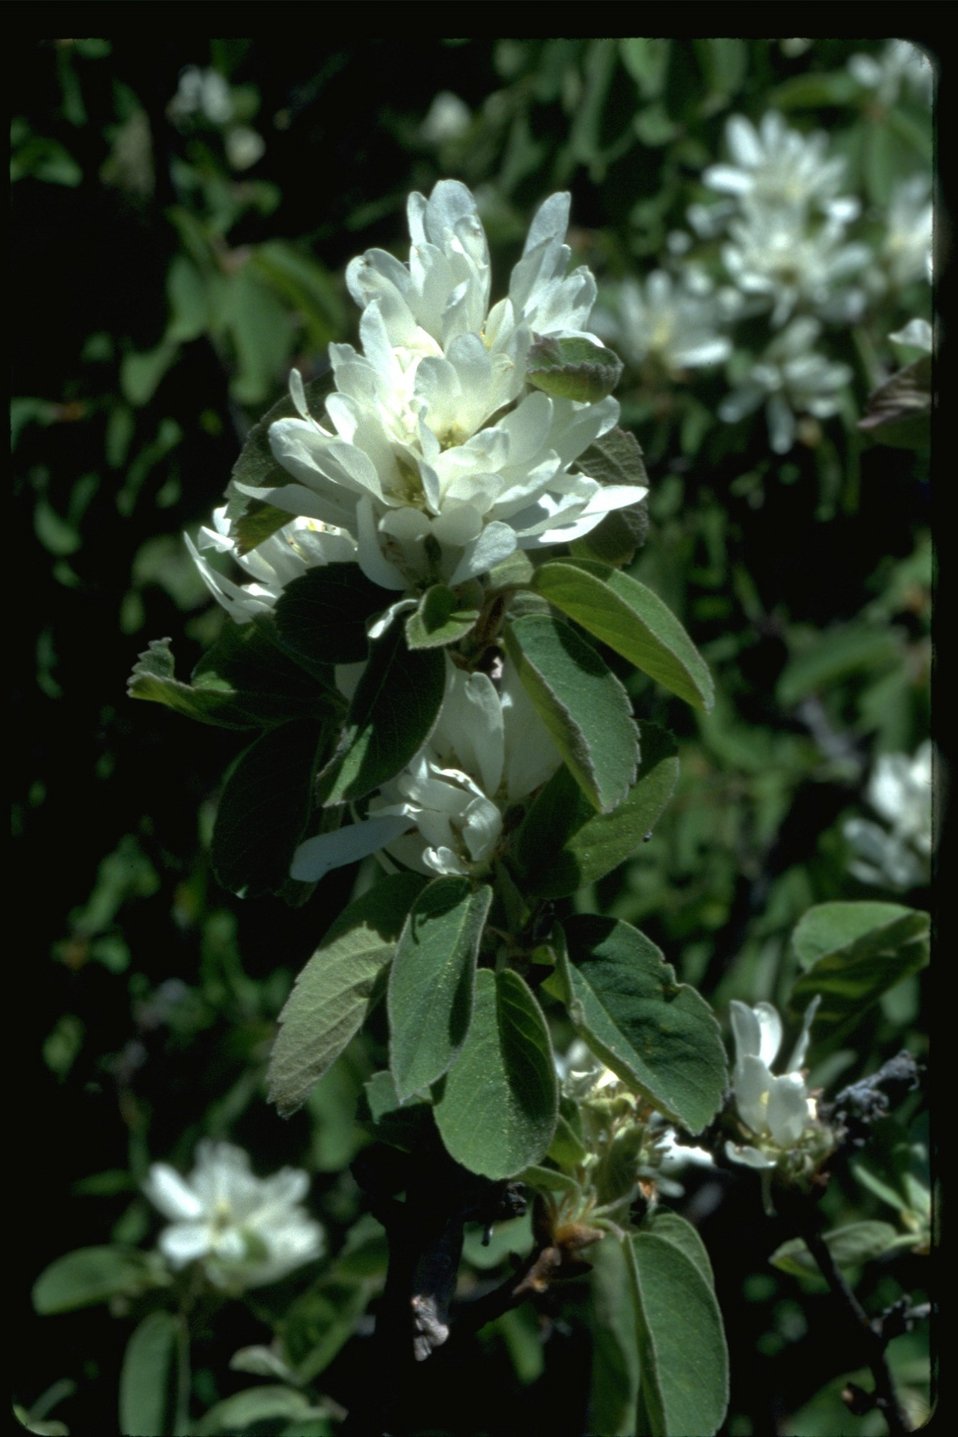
Close up shot of Service Berry.